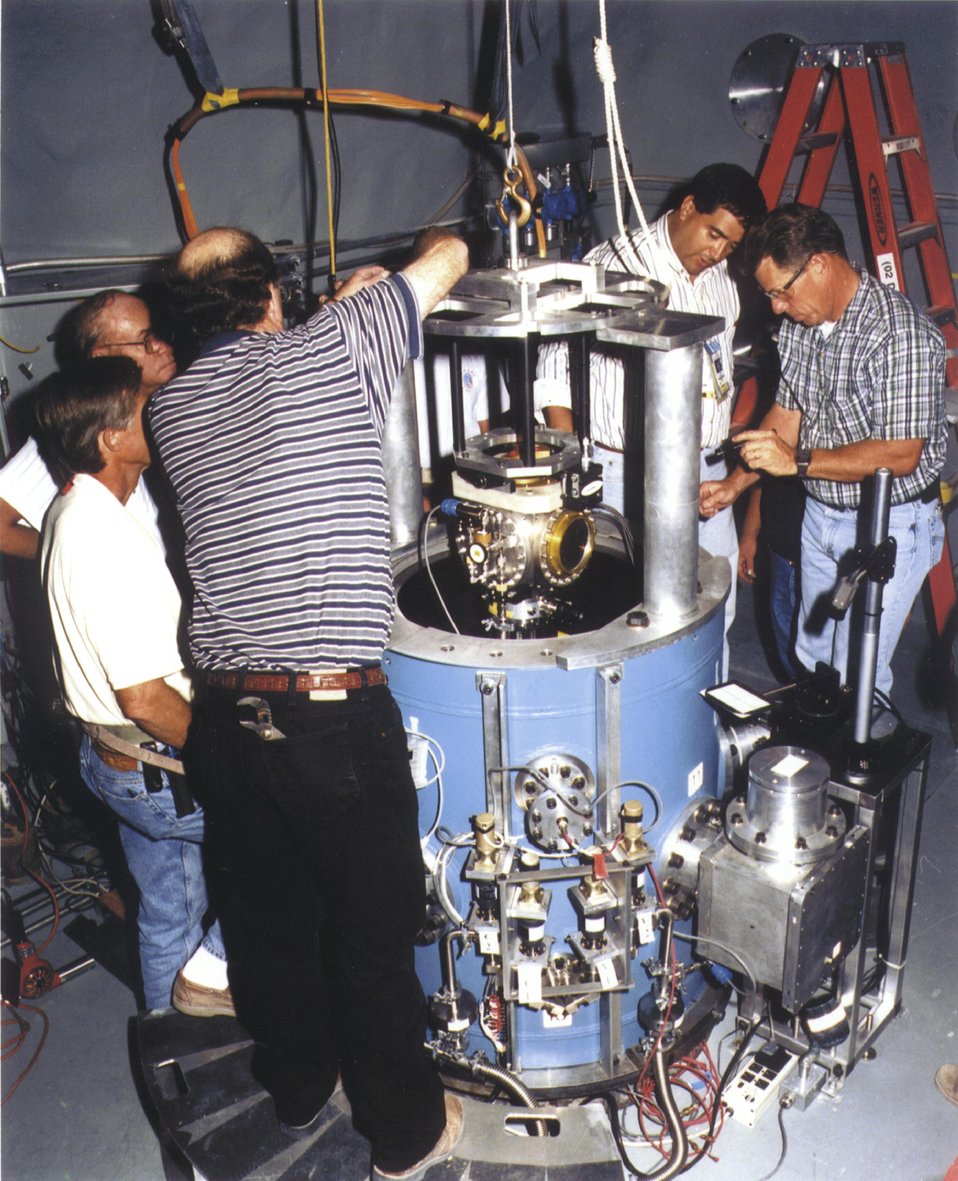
LLNL AND NTS WORKERS LOWER THE CUBE CONTAINING PLUTONIUM AND CHEMICAL EXPLOSIVES INTO THE CONFINEMENT VESSEL.

EXPLOSIVE TESTS ARE CONDUCTED DEEP UNDER THE NEVADA DESERT BY LAWRENCE LIVERMORE NATIONAL LABORATORY PHYSICISTS AND ENGINEERS. THE SUBCRITICAL EXPERIMENTS ARE AIMED AT PROVIDING IMPORTANT DATA TO EXPERTS WATCHING OVER THE NATION'S NUCLEAR STOCKPILE.